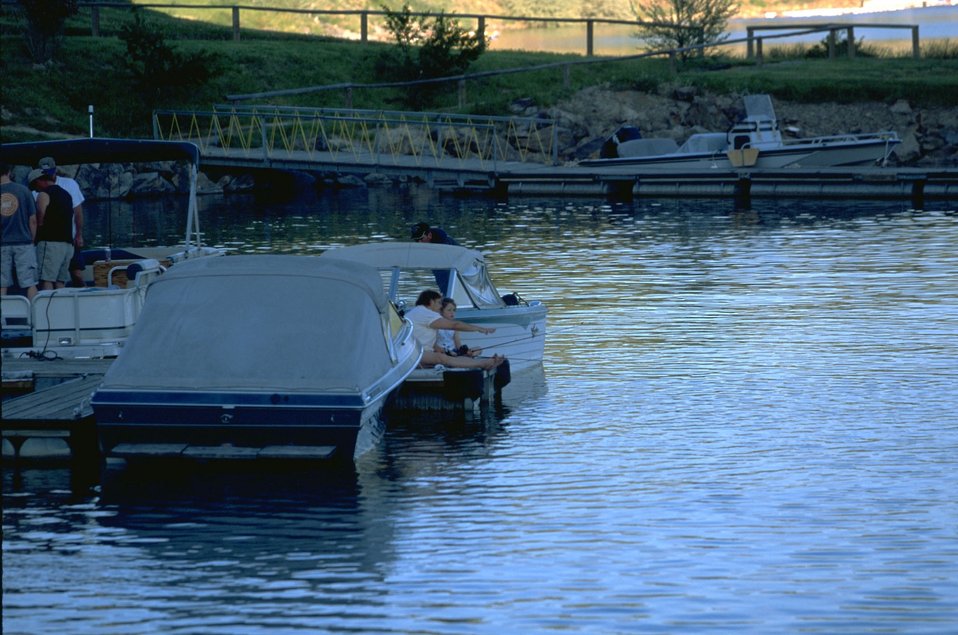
Fishing from the dock at Holter Lake